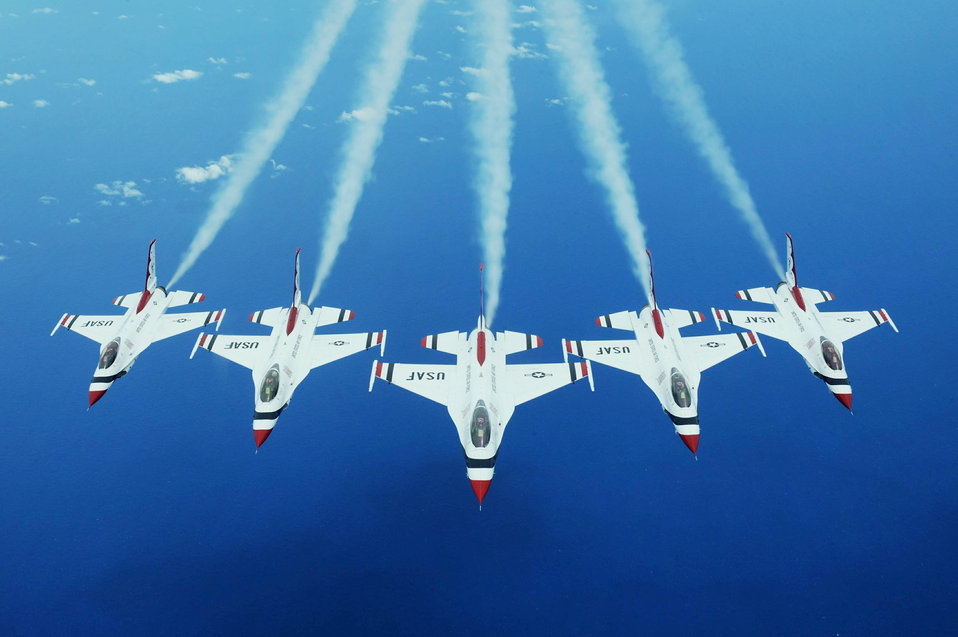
Thunderbirds take the show down under

The Air Force Thunderbirds flying in F-16 Fighting Falcons make their way to Townsville, Australia, Sept. 21, 2009, from Hickam Air Force Base Hawaii.